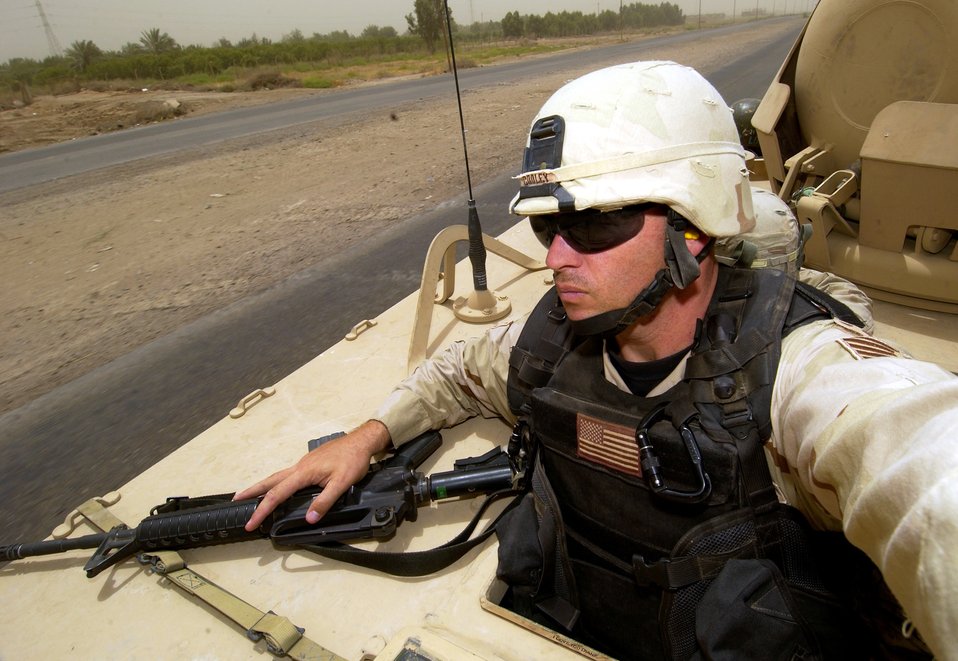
Secured

SOUTHWEST ASIA -- Tech. Sgt. Russell E. Cooley provides rear security on an M-113 Armored Personnel Carrier recently. Sergeant Cooley is a combat photojournalist assigned to U.S. Army's 3rd Brigade, 3rd Infantry Division.